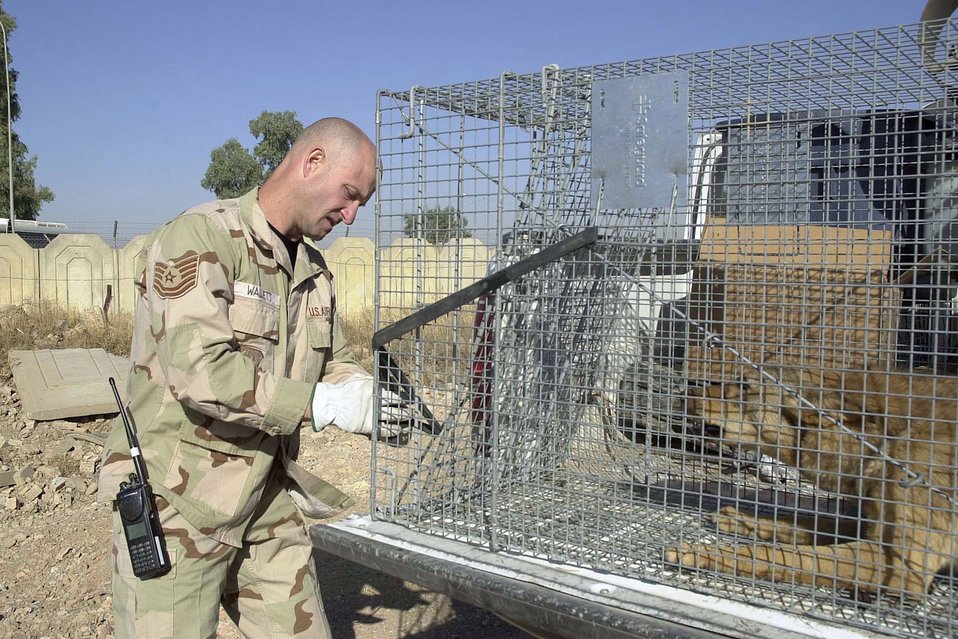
Rabid animals

KIRKUK AIR BASE, Iraq (AFPN) -- Tech. Sgt. Stacy Wallett, a Pest Management Technician, assigned to the 506th Expeditionary Civil Engineers Squadron here, deployed from McConnell Air Force Base, Kan., secures a cage containing a trapped dog. Rabies has been found in the animal population here and so it is necessary for technicians like Sgt. Wallett to remove stray animals that would otherwise endangered the servicemembers deployed here in support of Operation Iraqi Freedom.